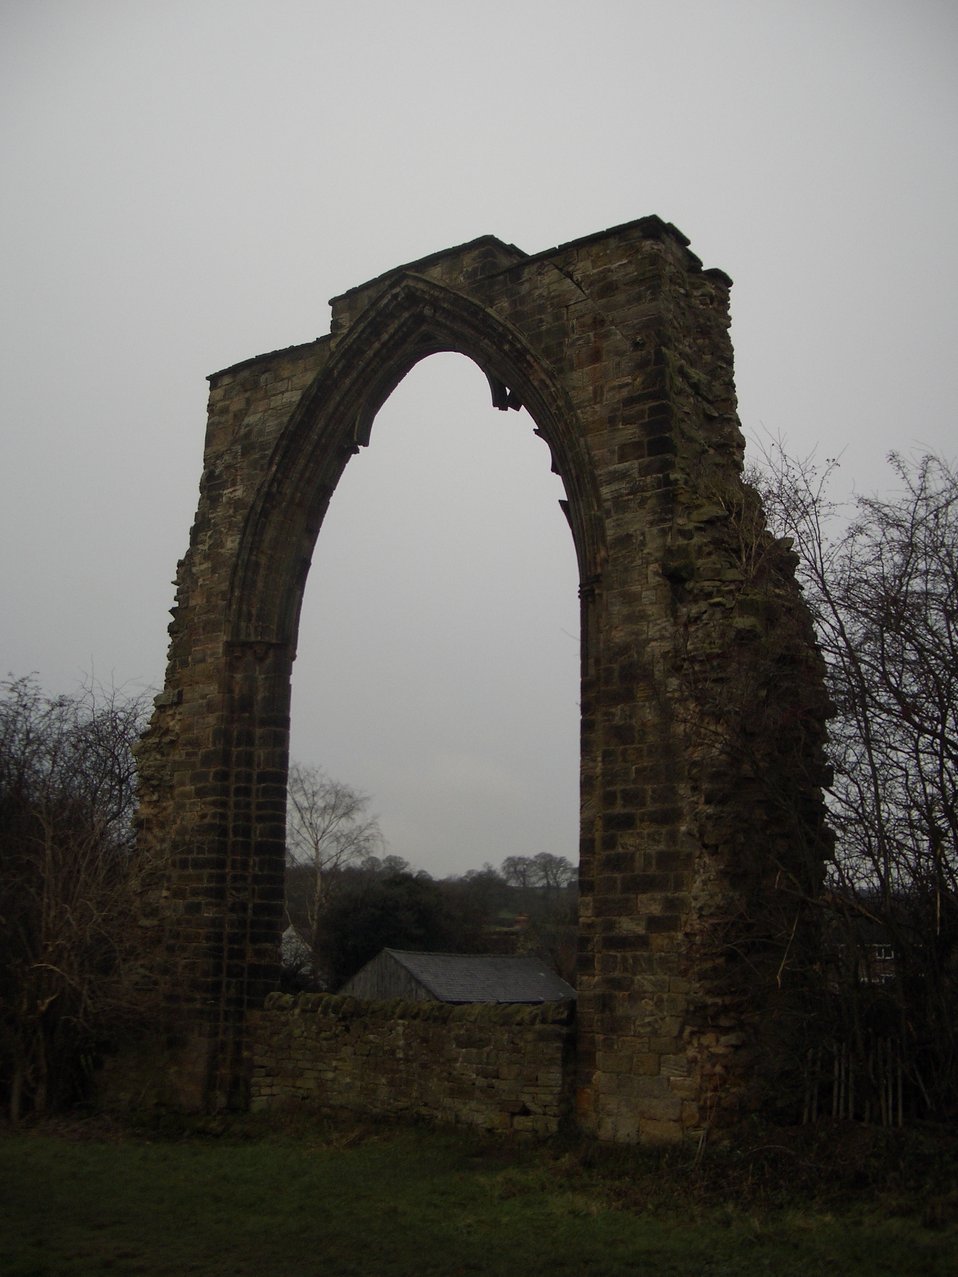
Dale Abbey, Derbyshire Author Andrew Abbott.